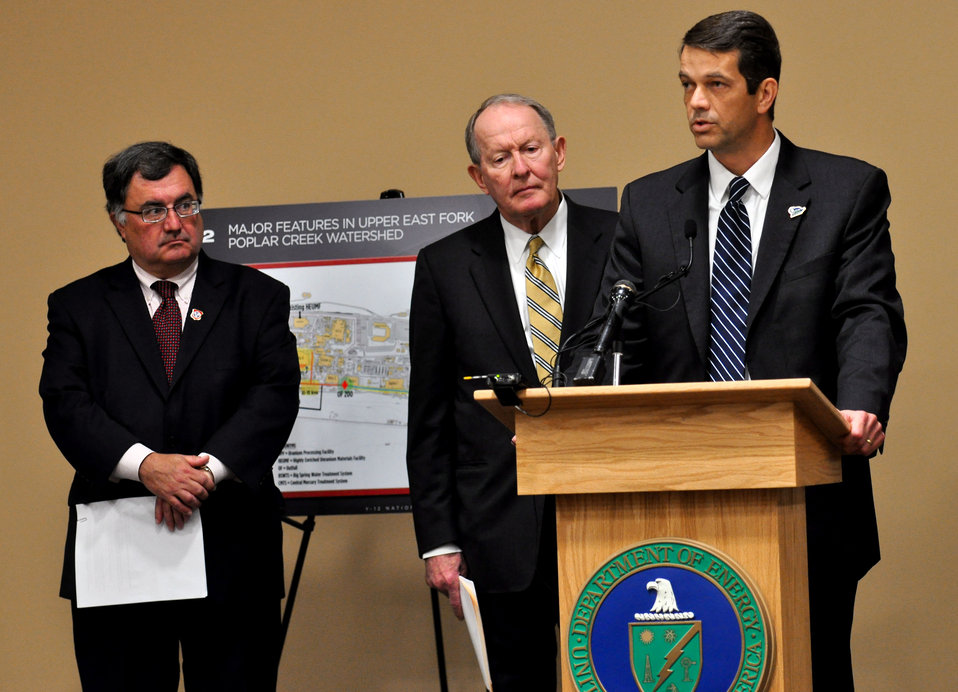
Mercury Cleanup Press Conference Y-12 Oak Ridge Speaking Oak Ridge EM Manager Mark Whitney, L to R Tennessee Department of Environment and Conservation Commissioner Robert Martineau, U.S. Sen. Lamar Alexander (R-Tenn.)

13-051 DOE photo Lynn Freeny 5-3-2013 Oak Ridge Tennessee